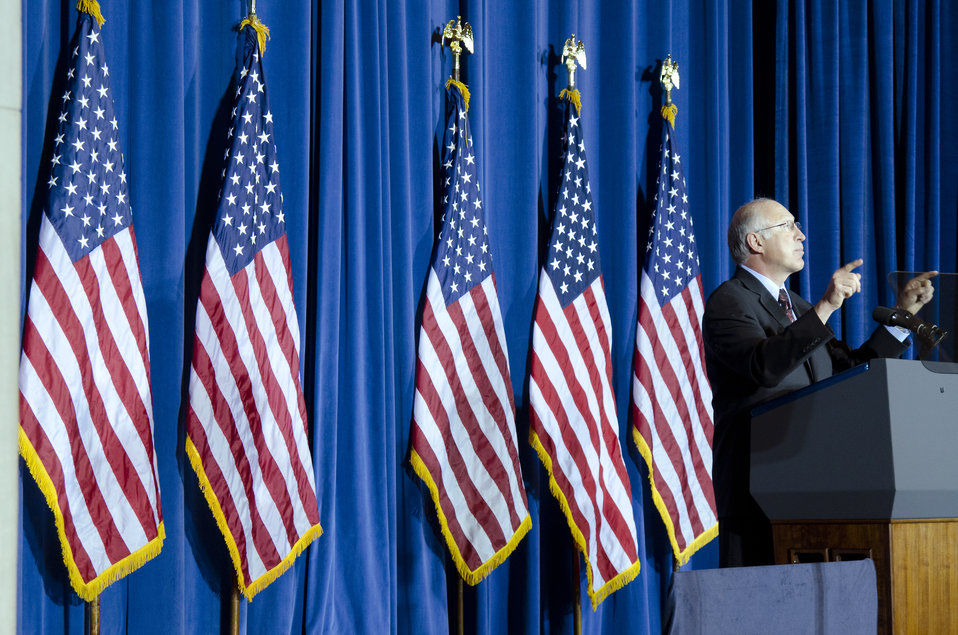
Interior Secretary Ken Salazar made opening remarks at the White House Conservation Summit “Growing America’s Outdoor Heritage and Economy” held at the Interior Department in Washington, D.C., on Friday, March 2, 2012. This conference was part of President Barrack Obama’s, “America’s Great Outdoors Initiative” to spotlight community-driven conservation efforts and discussed how to build their success.